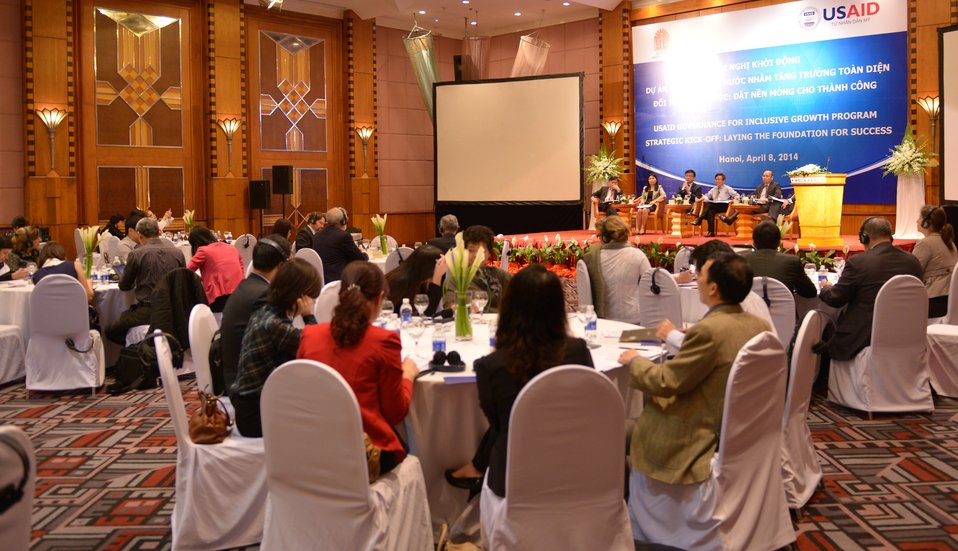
Strategic Kick-off of Governance for Inclusive Growth Program

Hanoi, April 8, 2014.